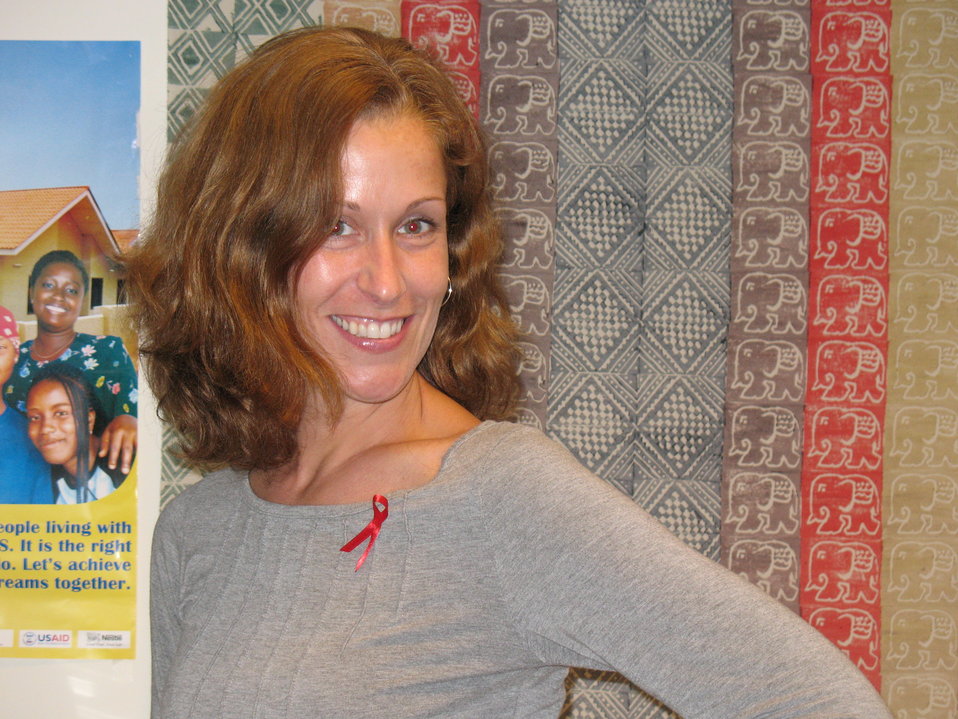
LJ